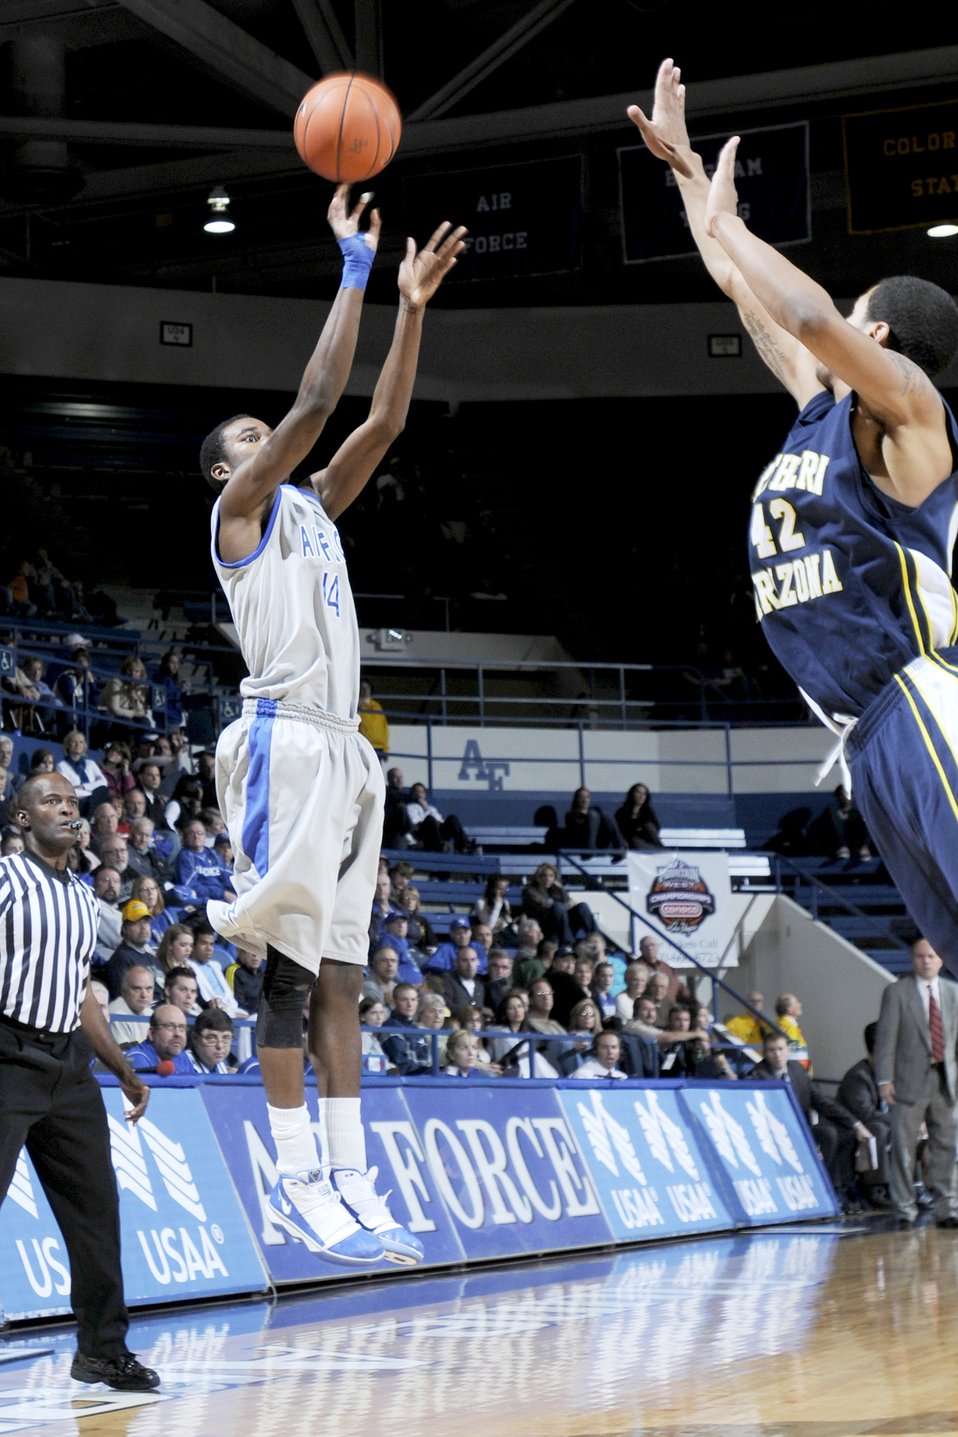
Falcons vs Northern Arizona

U.S. Air Force Academy freshman guard Michael Lyons takes a jumpshot as Lumberjack Josh Lepley defends during the Falcons' game against Northern Arizona at the Academy's Clune Arena Dec. 19, 2009. Air Force lost the game 60-52.